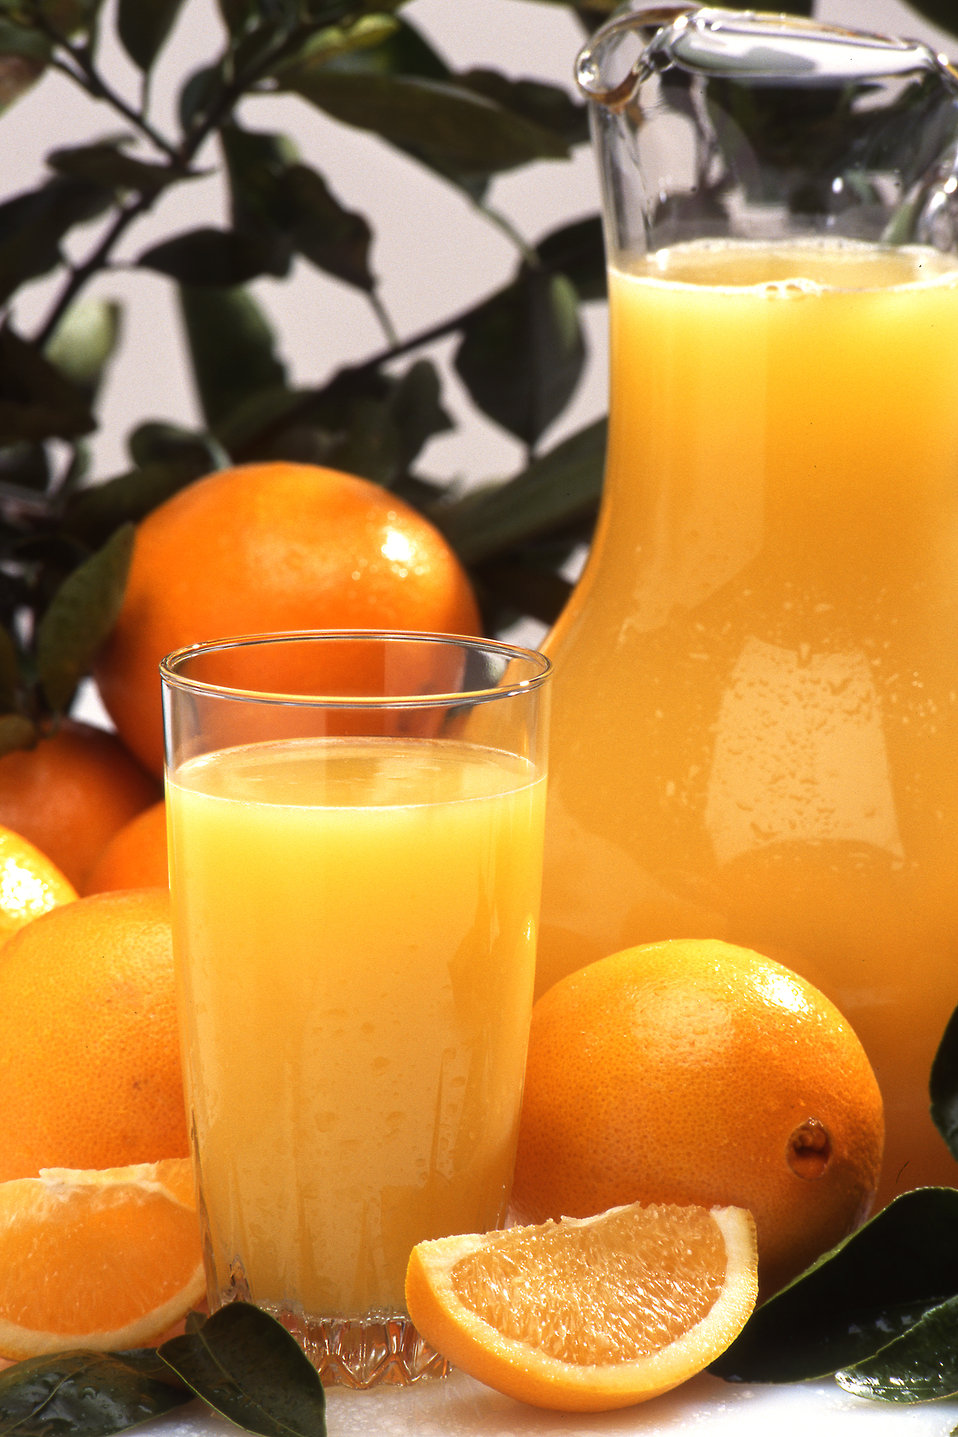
Fresh orange juice and oranges are displayed on Dec. 18, 2012. The U.S. Department of Agriculture’s (USDA) Agriculture Research Service (ARS) Beltsville Human Nutrition Research Center (BHNRC) researchers in Beltsville, MD have analyzed levels of vitamin D in orange juice and milk before and after fortification. This data is now included in the USDA National Nutrient Database for Standard Reference.